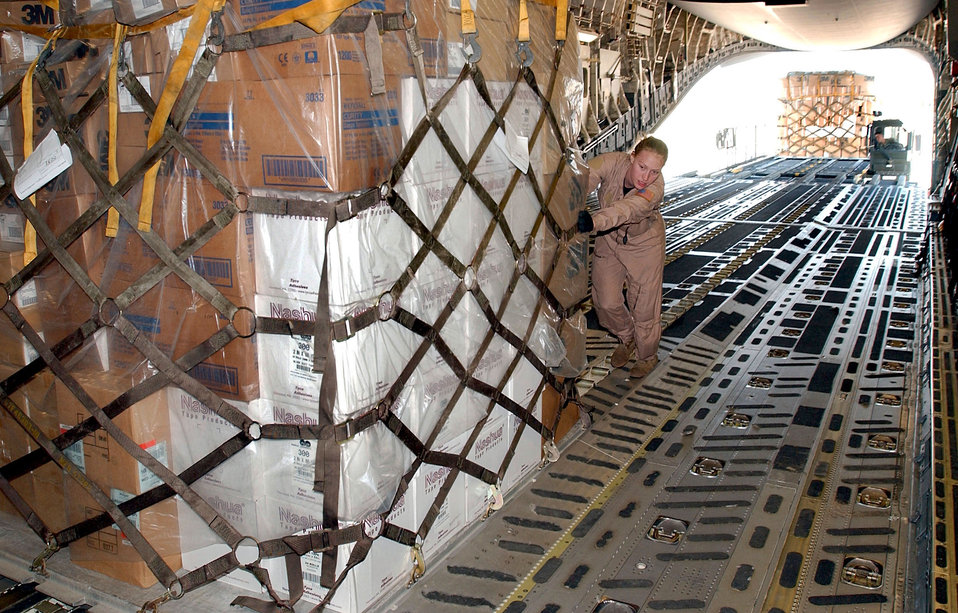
Pushing pallets

OPERATION IRAQI FREEDOM -- A crewmember pushes a pallet of cargo onto a C-17 Globemaster III. The C-17 landed a Burgas Airport on its way to deliver humanitarian aid to the people of Iraq.